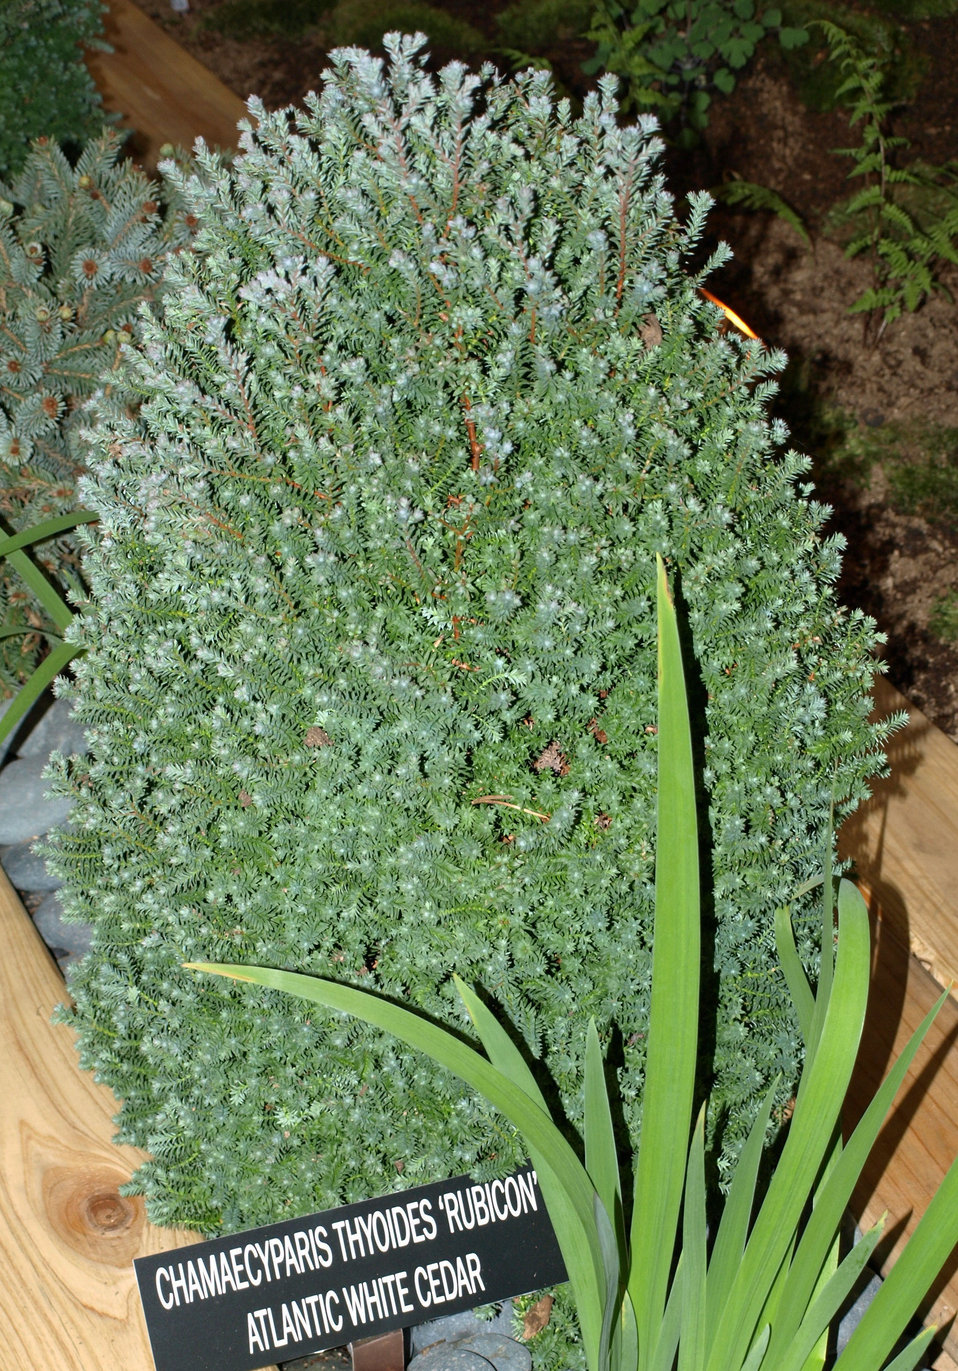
Atlantic white cedar

Chamaecyparis thyoides ‘Rubicon’ (Atlantic white cedar), a native plant

Learn more about EPA’s Exhibit at the 2010 Philadelphia International Flower Show:
www.epa.gov/reg3esd1/garden/flower show.htm
www.epa.gov/reg3esd1/garden/flower show plants.htm
www.epa.gov/reg3esd1/garden/pdf/flowershow2010.pdf (6 pp, 864K)